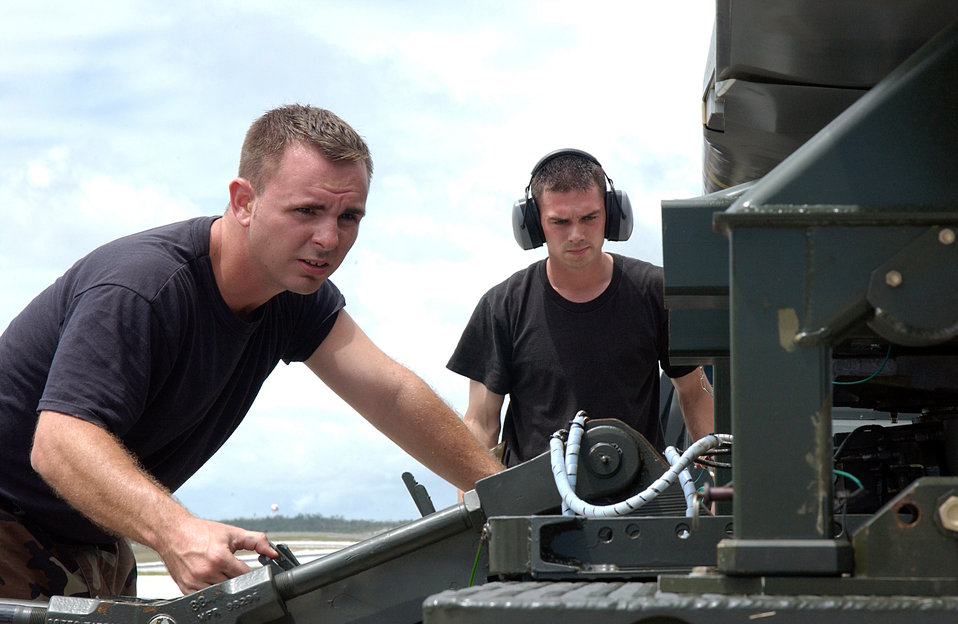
Buffing up

ANDERSEN AIR FORCE BASE, Guam -- Staff Sgts. John Beldin and Landon Favors, B-52 Stratofortress weapons loaders, prepare an air-launched cruise missle for loading on a B-52 here March 20. Aircraft and support troops from the 2nd Bomb Wing at Barksdale Air Force Base, La., are deployed as part of the 7th Air Expeditionary Wing.